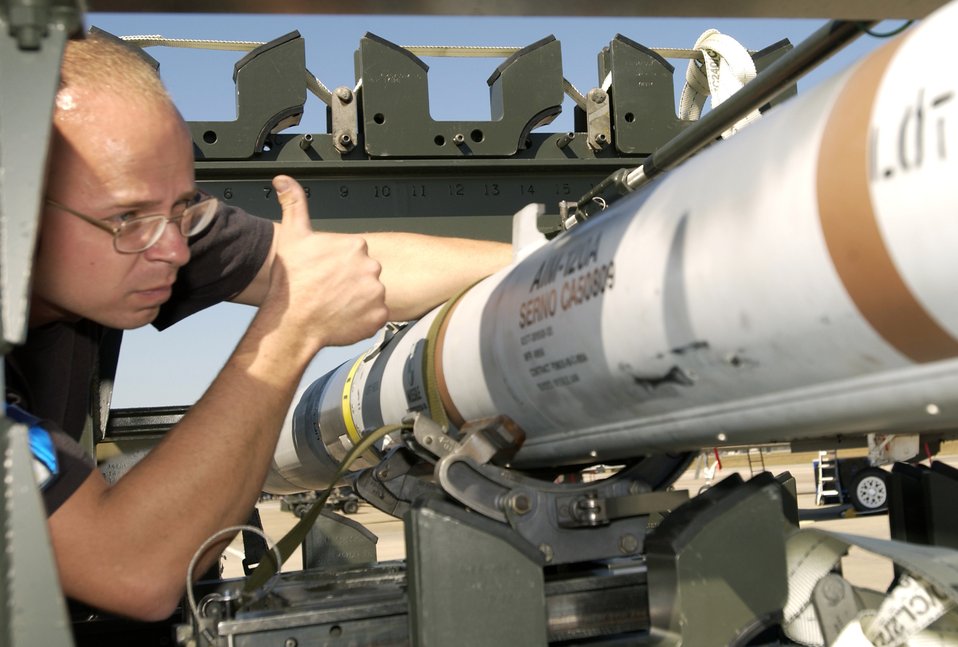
50th anniversary of William Tell kicks off at Tyndall

TYNDALL AIR FORCE BASE, Fla. -- Staff Sgt. Kevin Skaggs prepares to load a missile during William Tell 2004 here Nov. 8. This is the 50th anniversary of the competition, which tests an aircrew's ability to perform under combat conditions. Two weeks of competition will challenge pilots, weapons loaders and maintainers from five F-15 Eagle fighter squadrons. Sergeant Skaggs is assigned to the 95th Air Maintenance Unit here.